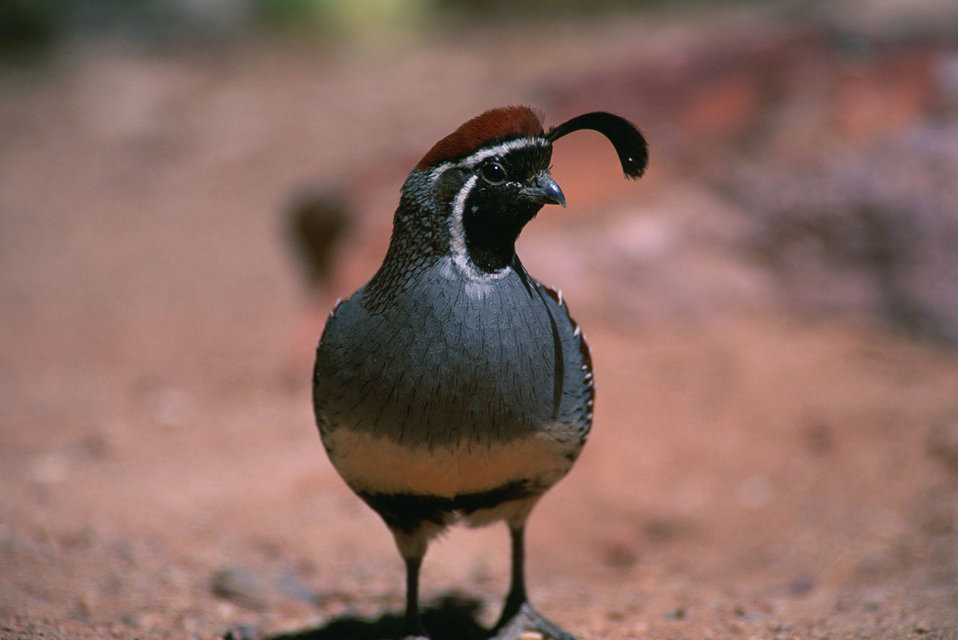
Gambel's quail

An upclose shot of a Gambel's quail resting on the ground.